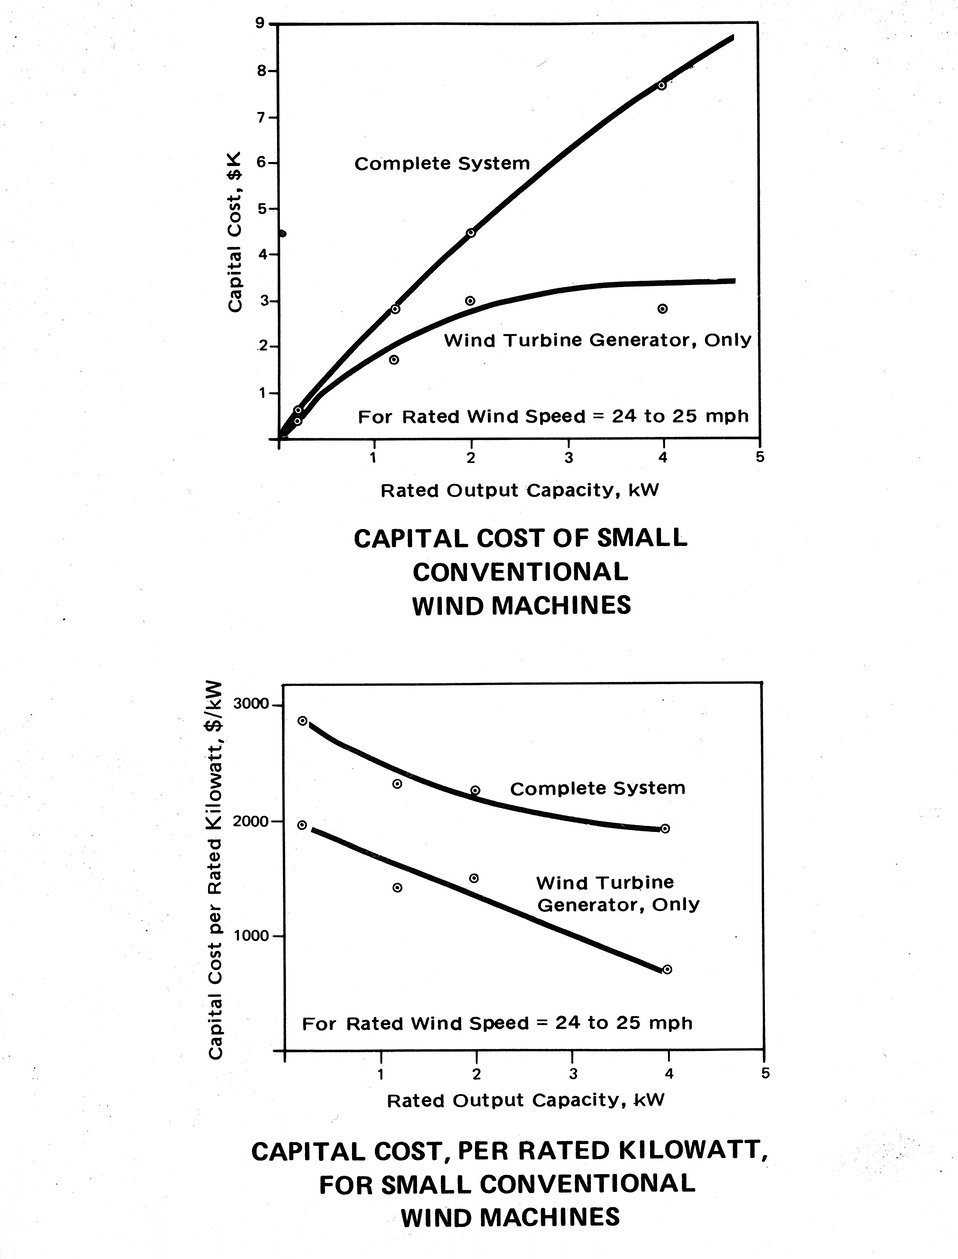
These graphs describe the economics of small wind energy conversion systems, in which the rated output capacity ranges from one to five kilowatts. c. 1977